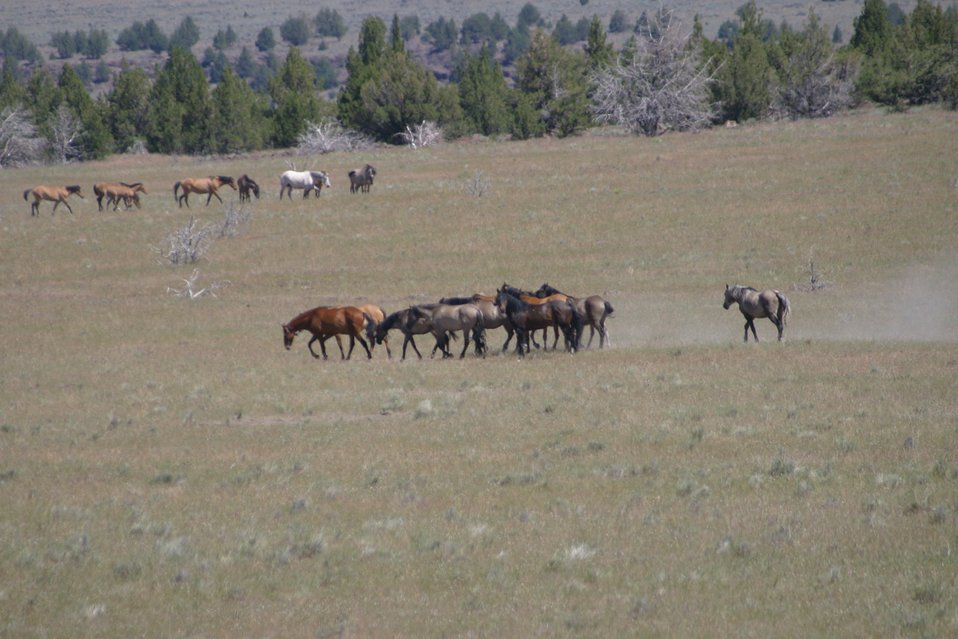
Wild Horse(s) in the Kiger Wild Horse Herd Management Area.